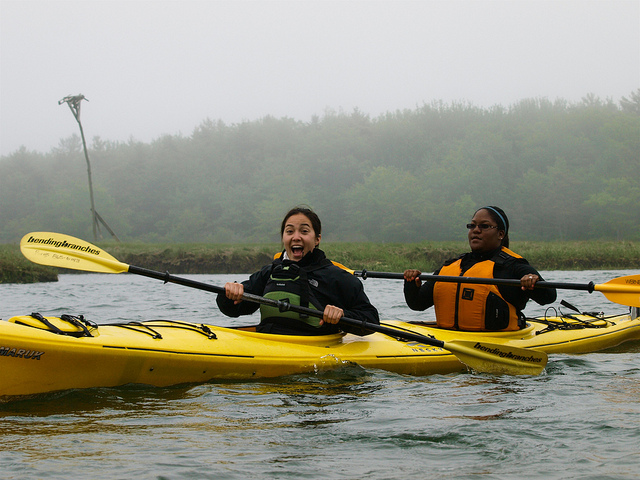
girls kayaking

Conservation Intern Program kayak trip, 2010